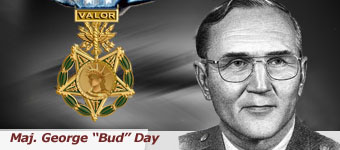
Maj. George E.